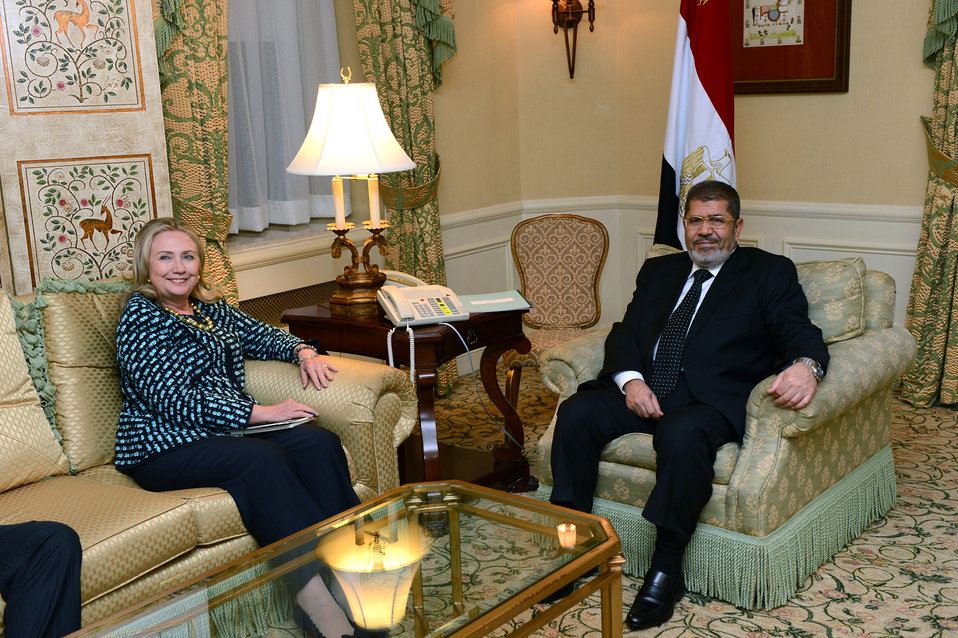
Secretary Clinton Meets With Egyptian President Morsi

U.S. Secretary of State Hillary Rodham Clinton meets with Egyptian President Mohammed Morsi in New York, New York on September 24, 2012.